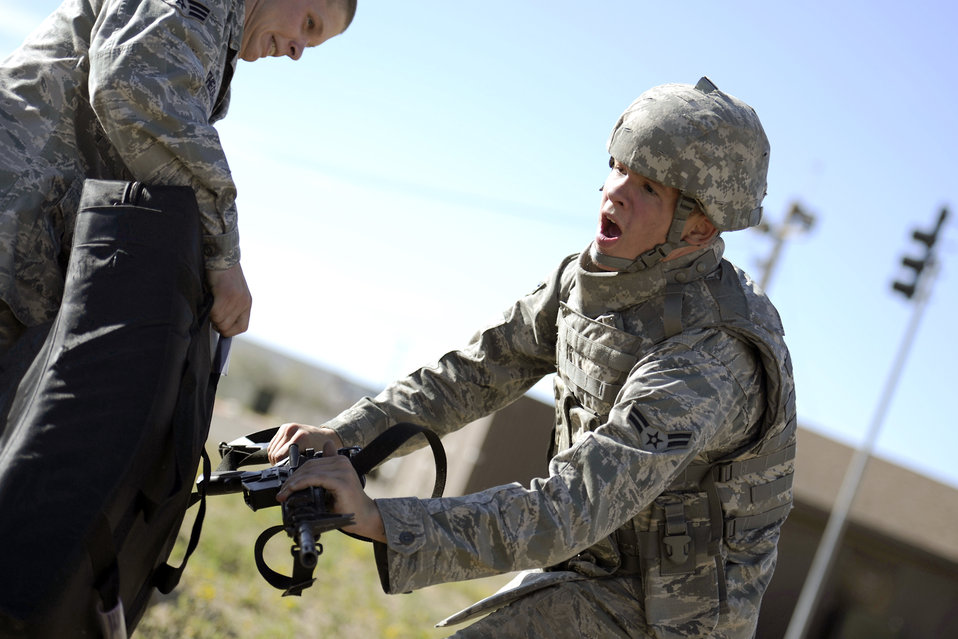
Security forces prepare for combat at Hill

Airman 1st Class Robin Havrillo practices rifle-fighting techniques during security forces combat readiness training Sept. 13, 2010, at Hill Air Force Base, Utah. The course provides Airmen with the basic skills needed to deploy to include tactical movements, land navigation and self-aid buddy care.